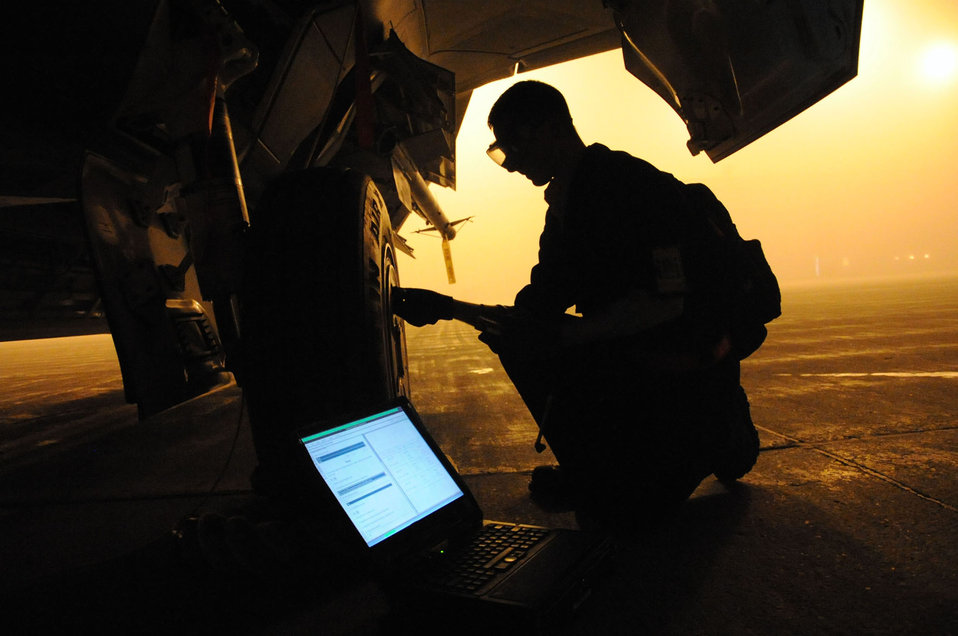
Step by step

Airman 1st Class Robert Miller does a tire pressure check on an F-22 Raptor while checking standards on the aircraft at Joint Base Elmendorf-Richardson, Alaska. Airman Miller is an F-22 crew chief with the 90th Aircraft Maintenance Unit.